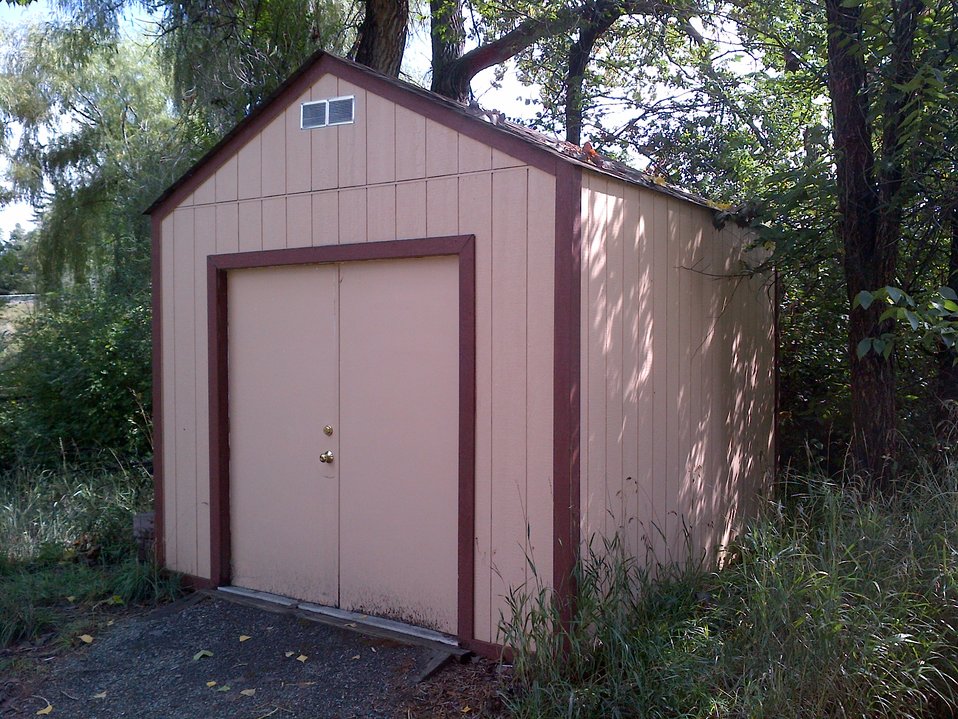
Shed - East